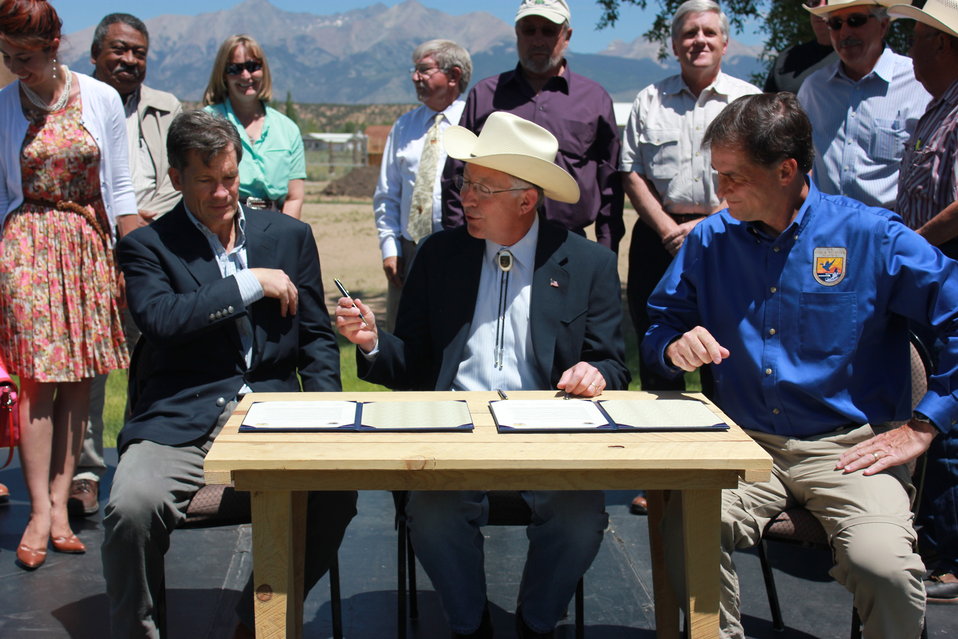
Historic Conservation Easement in Sangre de Cristo Mountains